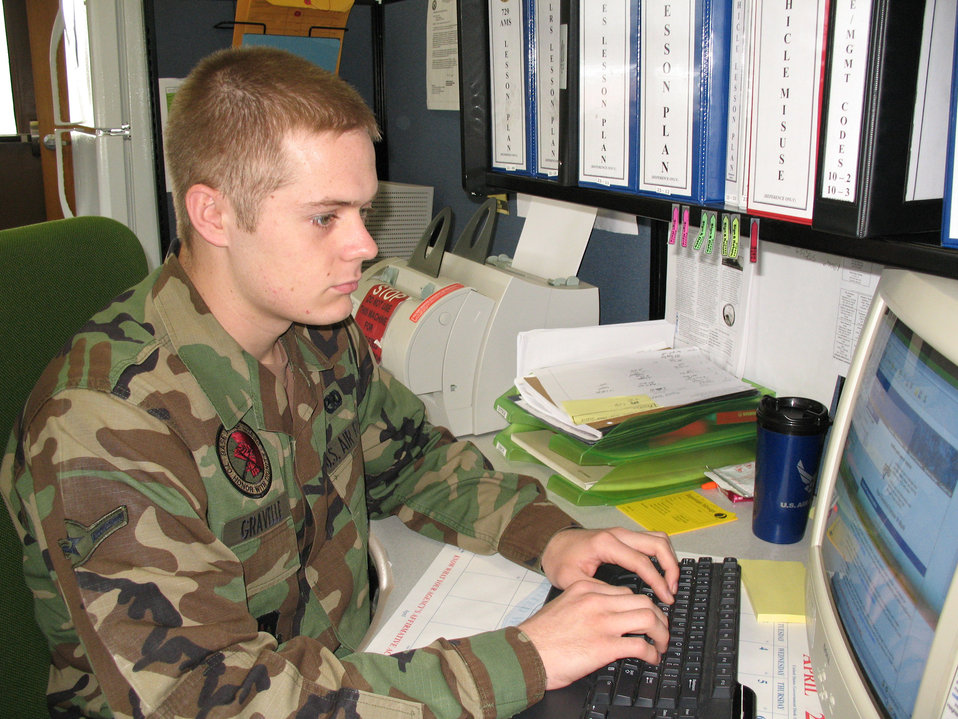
Hackers gain access to MyPay accounts

Airman Simon Gravelle checks his MyPay Account online using his login ID and personal identification number in April t Lajes Field, Azores. The Defense Finance and Accounting Service has reported a series of recent identity theft cases to MyPay customer accounts. Airman Gravelle is assigned to the 65th Logistical Readiness Squadron.